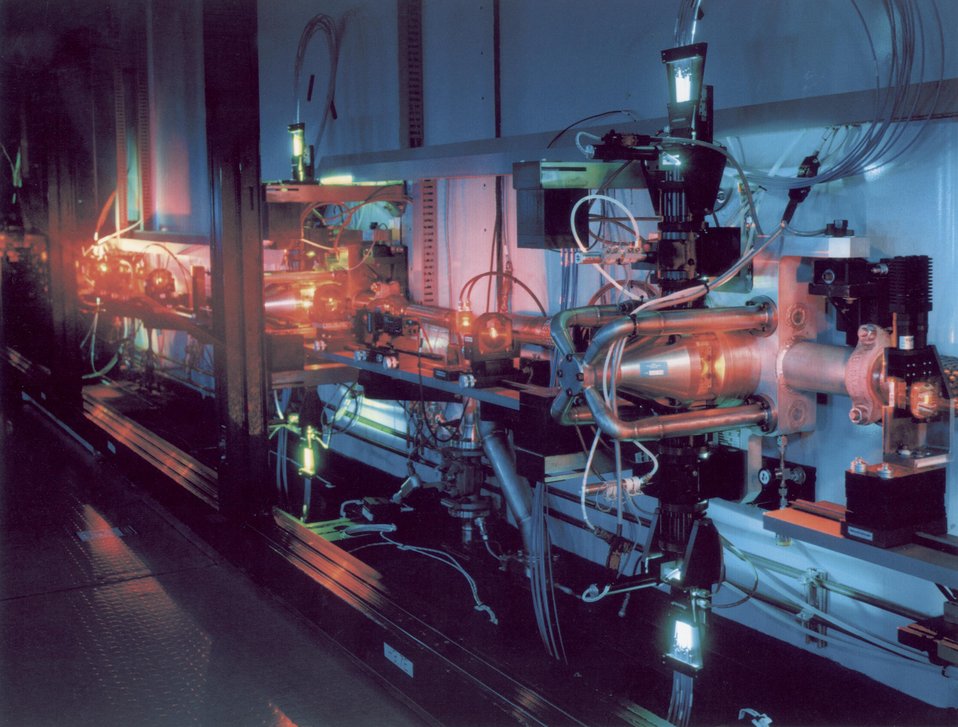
AVLIS PLANT-SCALE DYE LASER CHAINS ABSORB GREEN LIGHT FROM SOLID STATE LASERS AND RE-EMIT IT AT A COLOR THAT CAN BE TUNED TO THE ISOTOPE OF INTEREST.

A DESIRED ISOTOPE OF A CHEMICAL ELEMENT MUST BE SEPARATED FROM THE REMAINING ISOTOPES, FOR USES RANGING FROM MEDICINE TO ENERGY TO WEAPONS APPLICATIONS. LLNL DEVELOPED AN EFFICIENT TECHNIQUE CALLED ATOMIC VAPOR LASER ISOTOPE SEPARATION (AVLIS), BASED ON THE FACT THAT DIFFERENT ISOTOPES OF THE SAME ELEMENT, WHILE ELECTRONICALLY IDENTICAL, HAVE DIFFERENT ELECTRONIC ENERGIES AND THEREFORE ABSORB DIFFERENT COLORS OF LASER LIGHT.